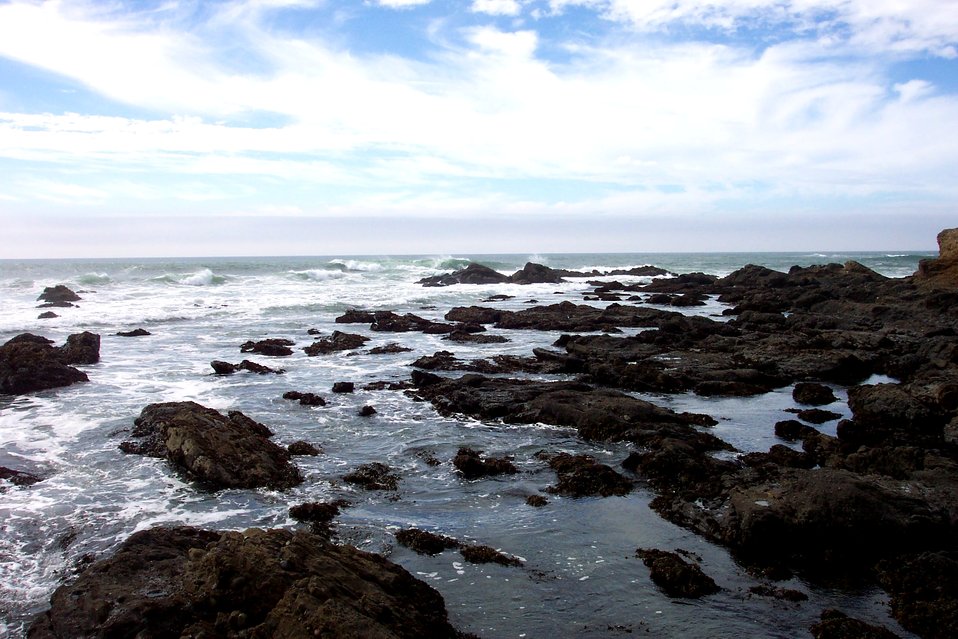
Rocky shore, tide pools and surf north of Pigeon Point.